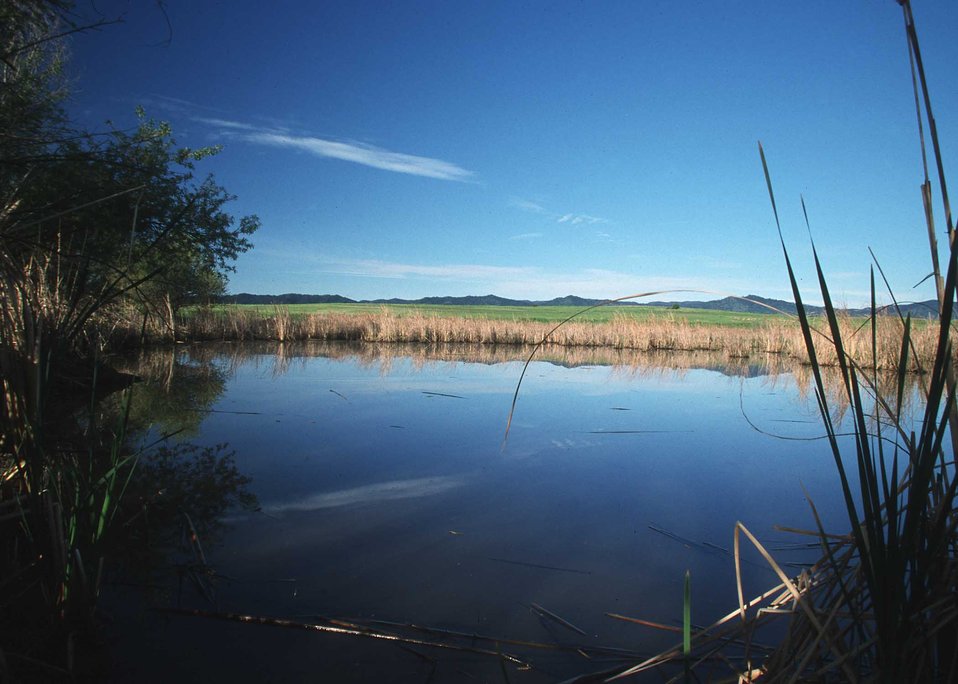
Restored wetland in Yolo County, California.